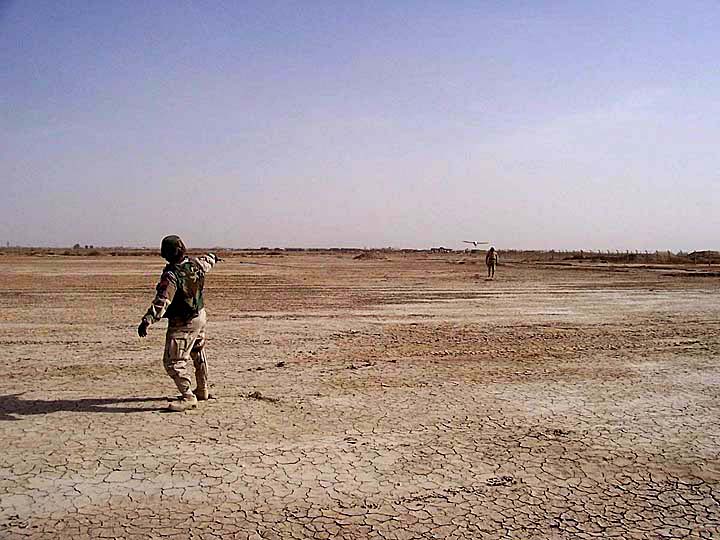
Desert Hawk UAV patrols Tallil

TALLIL AIR BASE, Iraq -- Master Sgts. John Jackson (Left) and Tyrone McKay launch a Desert Hawk here. The Desert Hawk is a miniature unmanned aerial vehicle used by security forces to see beyond base perimeters providing a rapid assessment of threats.